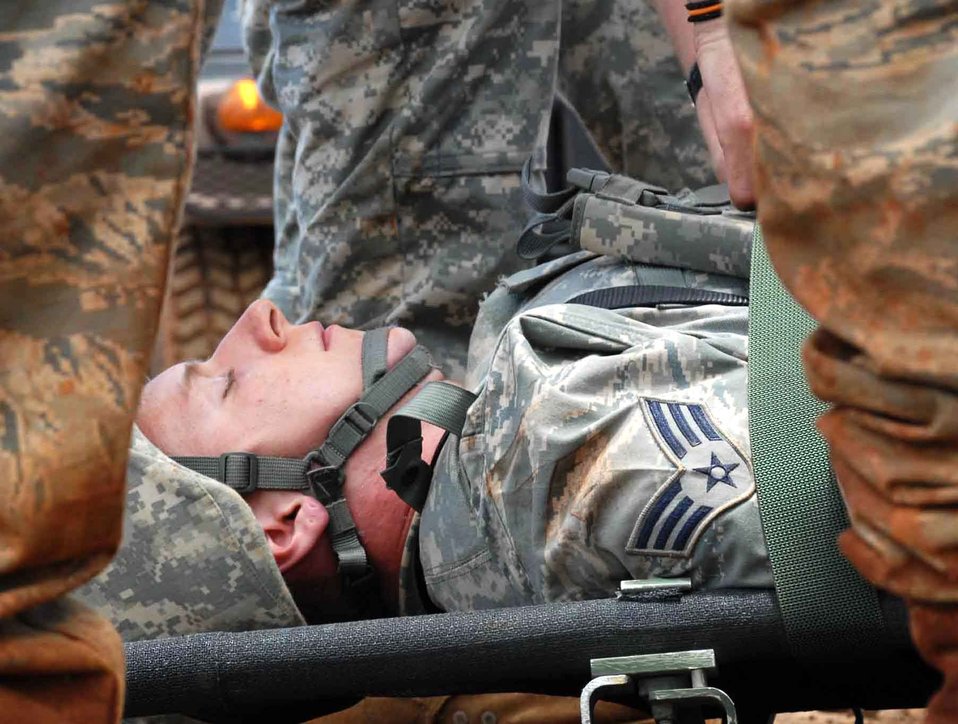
Airmen train with Army to become JTACs

Airman 1st Class Doug Fraites, 25th Air Support Operations Squadron ground radio maintenance, prepares to be medically evacuated from an austere environment during a field training exercise June 24. Tactical air control party members camped at Wheeler Army Airfield's East Range near Hickam Air Force Base, Hawaii, to sharpen proficiencies necessary for upgrade training to become combat mission-ready joint terminal attack controllers. Training like this ensures safe and reliable wartime readiness for TACPs.